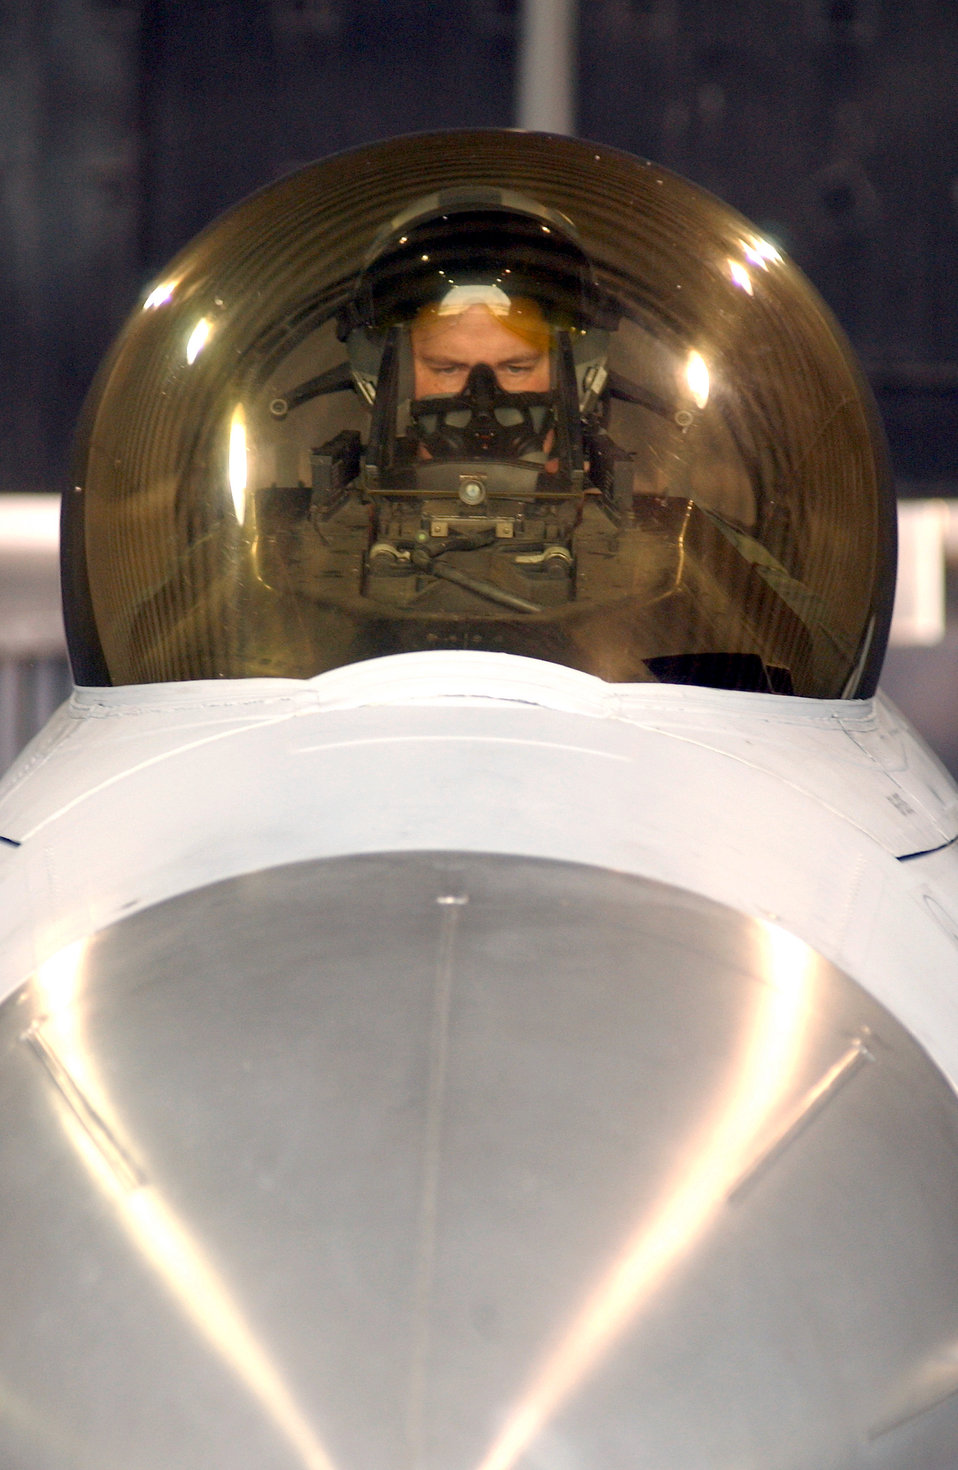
View before take off

KUNSAN AIR BASE, South Korea -- Capt. Jeff Mustin sits in an F-16 Fighting Falcon while awaiting clearance from the tower to take off during a Korean penninsula combat evaluation readiness exercise here June 10. Captain Mustin is a pilot with the 80th Fighter Squadron.